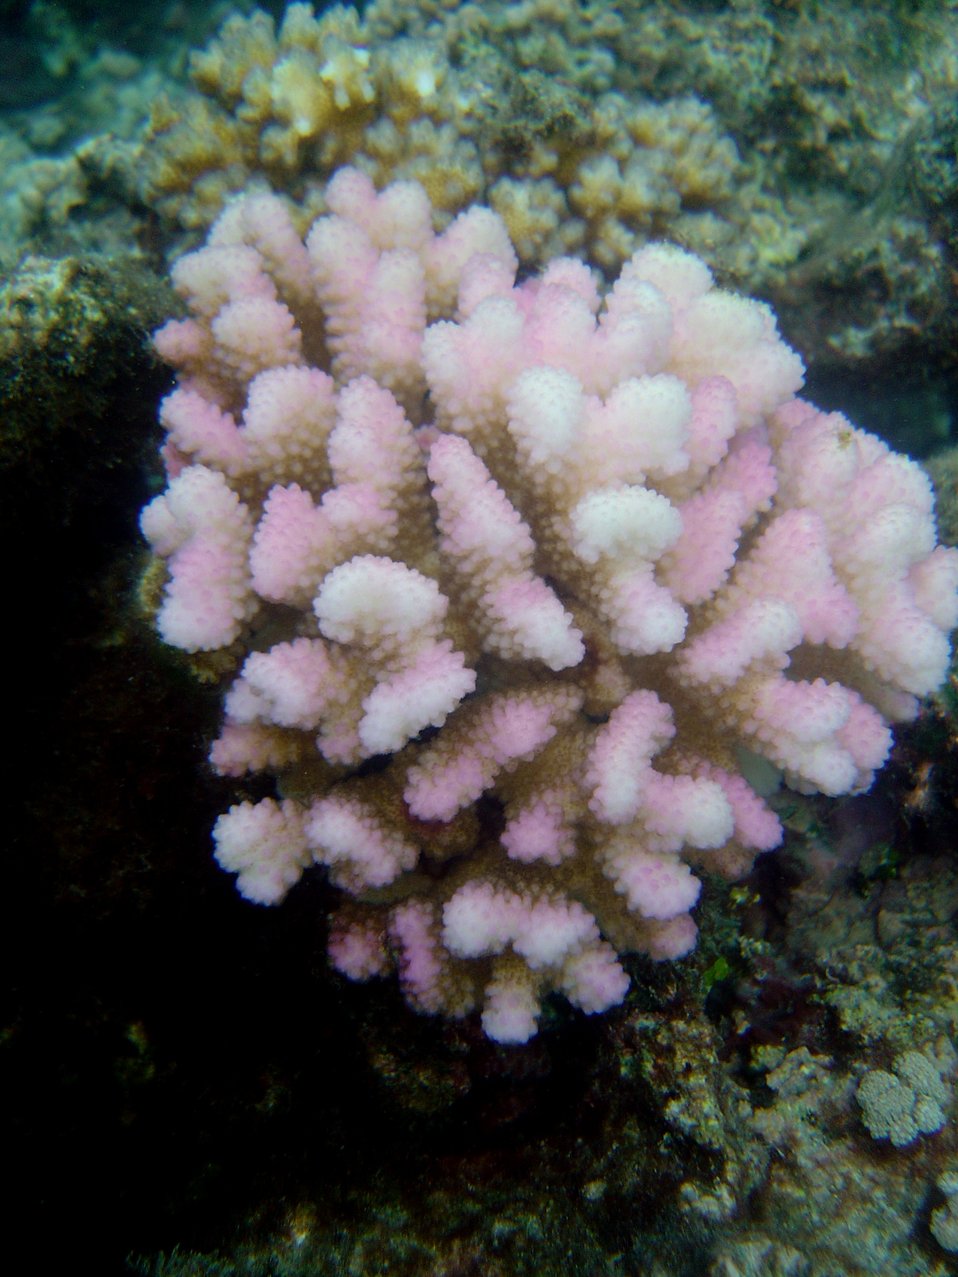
Coral bleaching